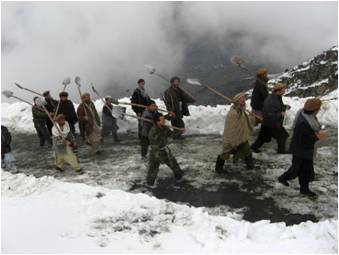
Shoveling Snow Builds Relationships

Traditionally a stronghold for the insurgency in Kapisa Province, Eskin is a small village in a valley where more than 2,000 families call home. Tough mountainous terrain and restricted access have limited the Government of the Islamic Republic of Afghanistan’s presence in this area. The road is the only way to reach the district center where Eskin valley villagers can access critical resources, including health services, markets and local government institutions.

However, a February snowstorm blocked the only route linking Eskin to the district center in Alasai, severing Eskin villagers from the world outside their valley. Following a request from the community, USAID’s Local Governance and Community Development project (LGCD) funded efforts to provide 140 local men with snow shovels and compensate them for ten days work to clear the valley’s 11-kilometer access road. The success of the project went well beyond snow removal.

Alasai District government officials visited the project site and shoveled snow alongside the local men to show their support and concern for the village. The impact of the snow clearing went beyond simply providing these men with a much-needed source of income in a difficult season; it provided a unique opportunity for the community to meet and discuss future development initiatives with their local government representatives.

A few weeks after the snow clearing, the people of Eskin announced that they would no longer tolerate a Taliban presence in the valley and would fight to protect future reconstruction and development efforts.

Though small in scale, the snow clearing activity demonstrated to Eskin residents that the government could respond to their grievances. LGCD continues to work throughout Afghanistan’s most volatile provinces to improve stability through strengthened governance, linking local populations with sub-national government structures to provide better service delivery in response to constituents’ needs.